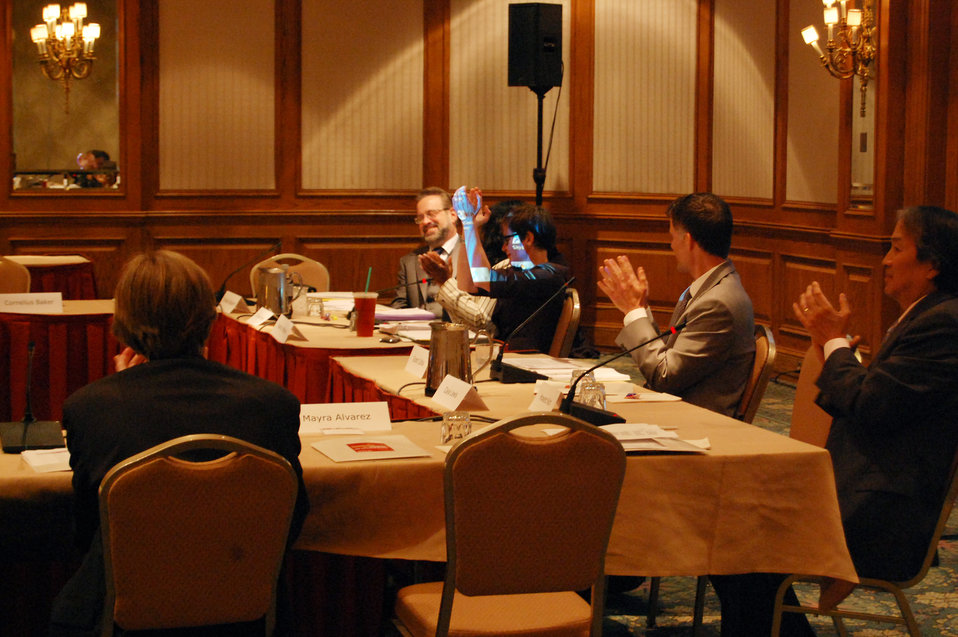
PACHA conf039